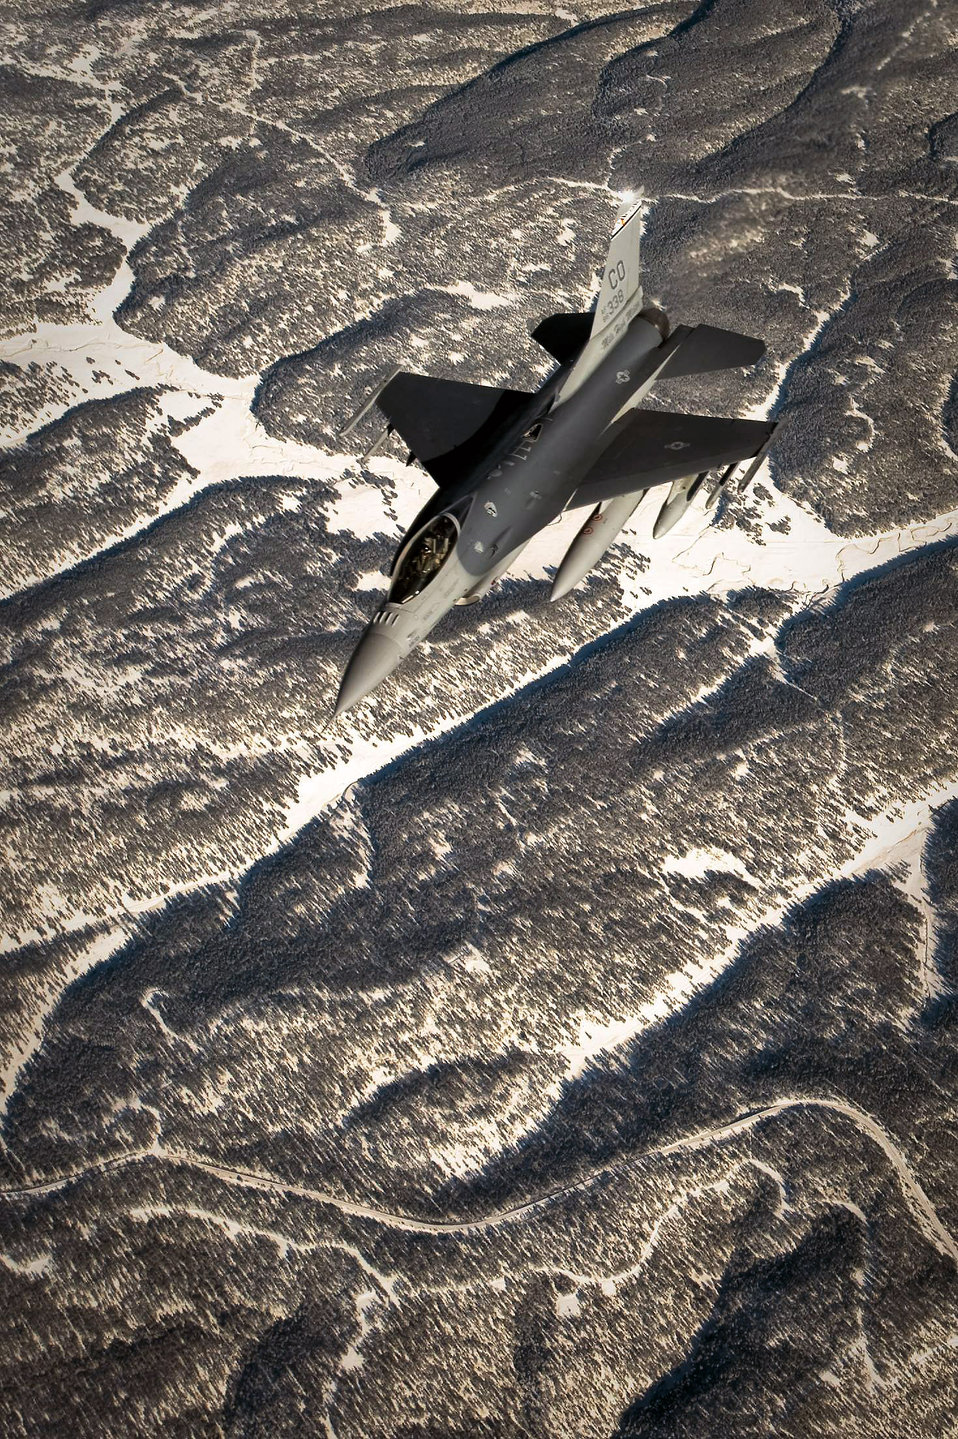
Gas and go

An F-16 Fighting Falcon prepares to get into position to receive fuel from a KC-135 Stratotanker Dec. 1 over the Southwestern United States. The F-16 was en route to Barksdale Air Force Base, La., to take part in Green Flag East, a pre-deployment exercise for Air Combat Command flying units that perform close-air support and precision-guided munitions delivery. The F-16 is from the 120th Fighter Squadron of the Colorado Air National Guard.